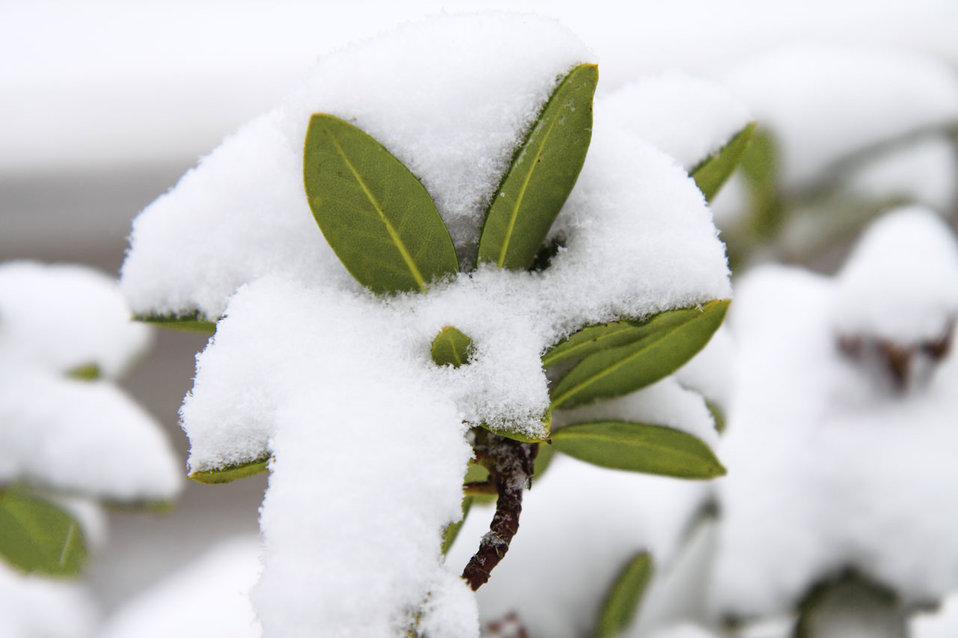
Leaves covered in snow

Green leaves covered in fresh snow.